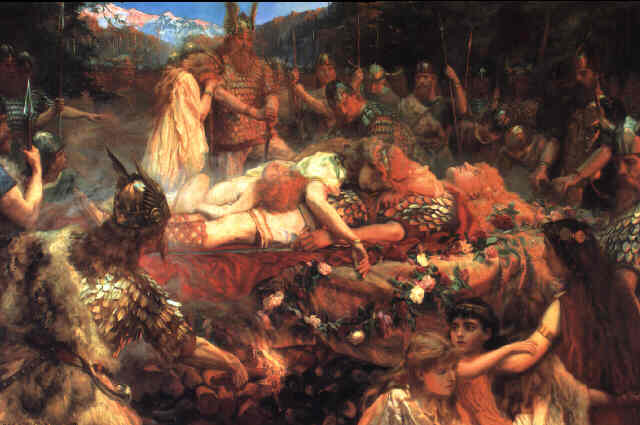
Death of a viking warrior